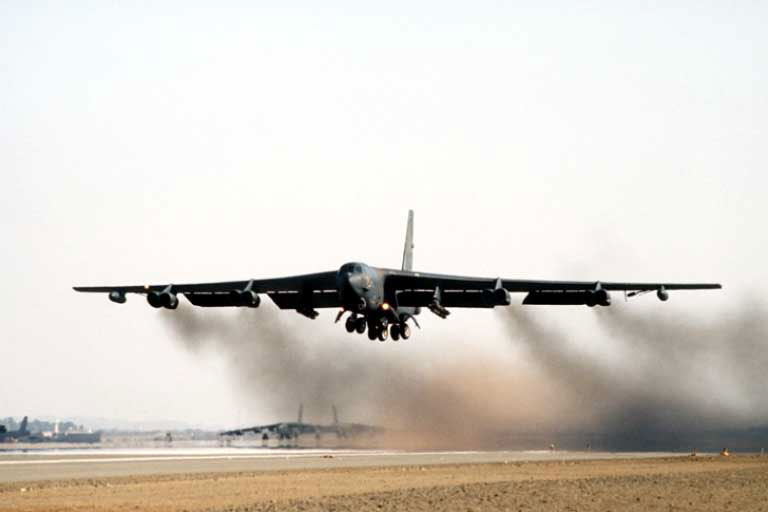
B-52 Stratofortess

1950's -- B-52 taking off.